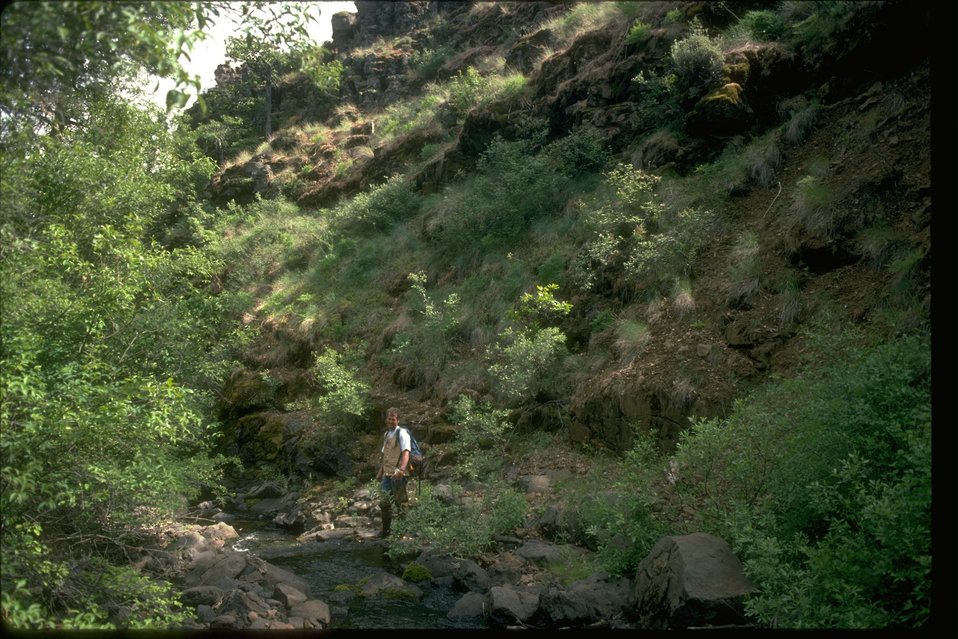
Botanist at work in Rock Creek area, Klickitat County, Washington.